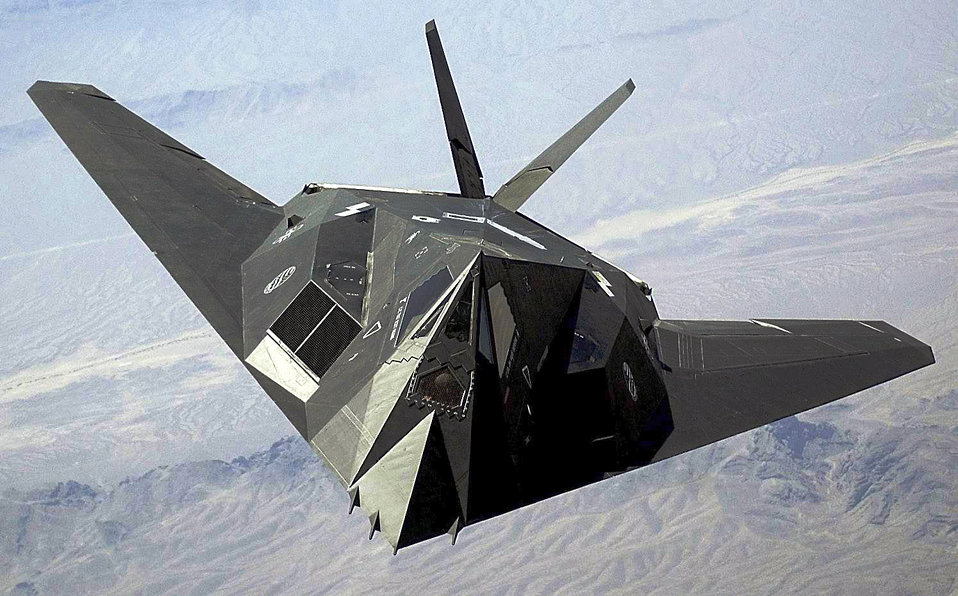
Nighthawk in flight

NELLIS AIR FORCE BASE, Nev. -- An F-117 Nighthawk flies over the Nevada desert. The unique design of the single-seat F-117 provides exceptional combat capabilities. The fighter can employ a variety of weapons and is equipped with sophisticated navigation and attack systems integrated into a digital avionics suite that increases mission effectiveness and reduces pilot workload. Detailed planning for missions into highly defended target areas is accomplished by an automated mission planning system developed, specifically, to take advantage of the unique capabilities of the Nighthawk.